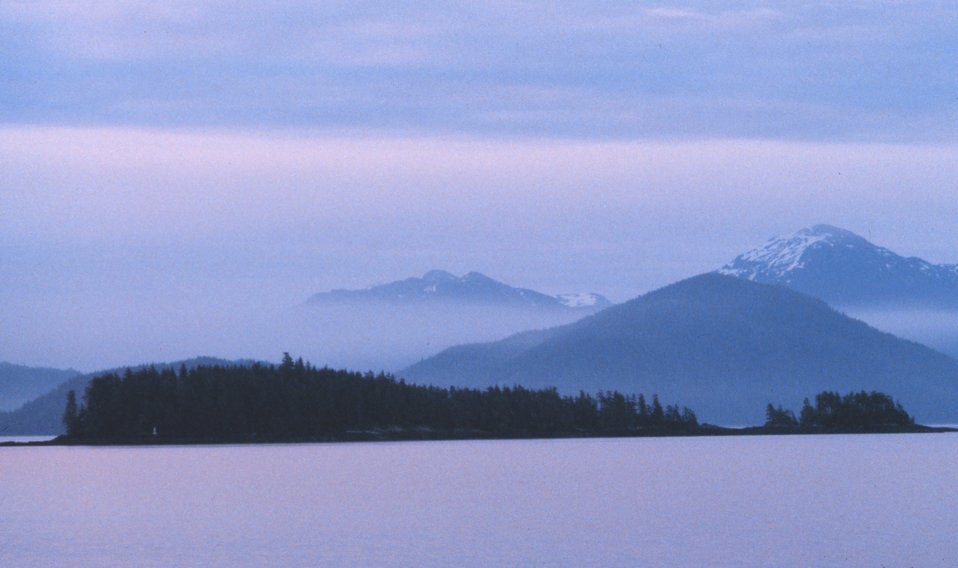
Taken from the NOAA Ship SURVEYOR